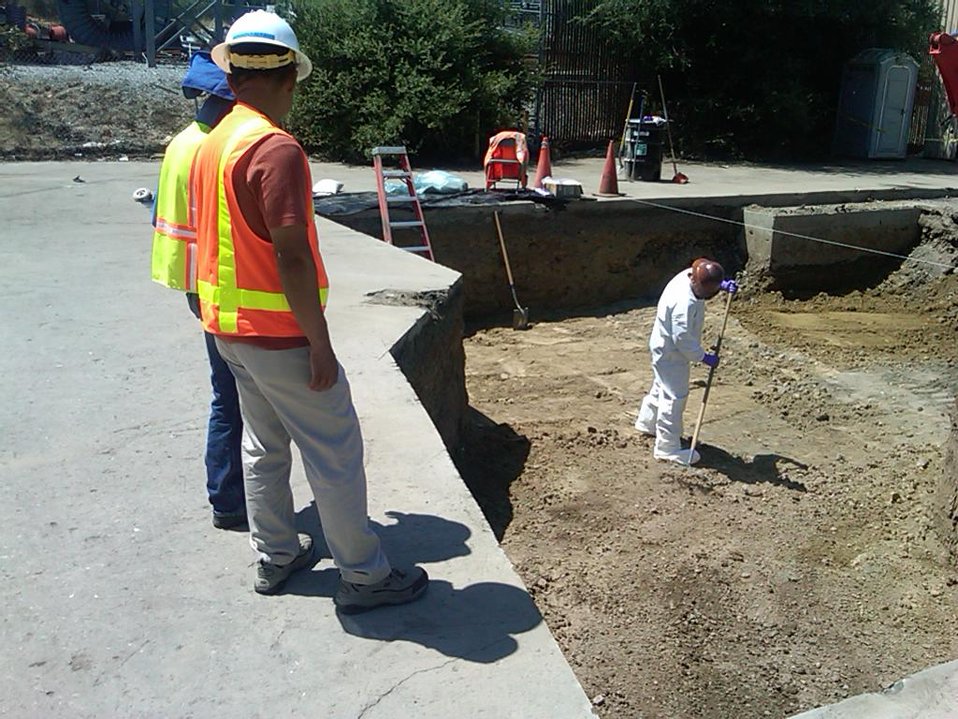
Recovery Act Supports Soil and Debris Cleanup, Groundwater Treatment at SLAC

Recovery Act workers are on track to remove more than 30,000 cubic yards of contaminated soil and debris at the SLAC National Accelerator Laboratory by September 2011.
The Recovery Act invested $14.3 million in legacy cleanup activities at SLAC. In addition to removing contaminated soil and debris that is shipped to local disposal facilities, Recovery Act workers installed three new groundwater treatment systems.